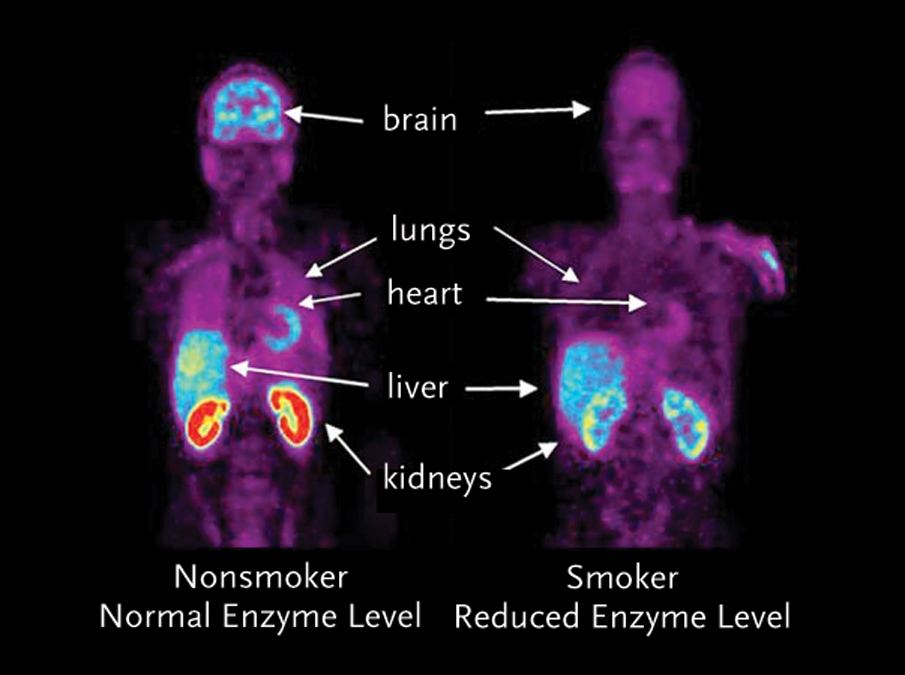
PET

Smoking reduces the enzyme monoamine oxidase